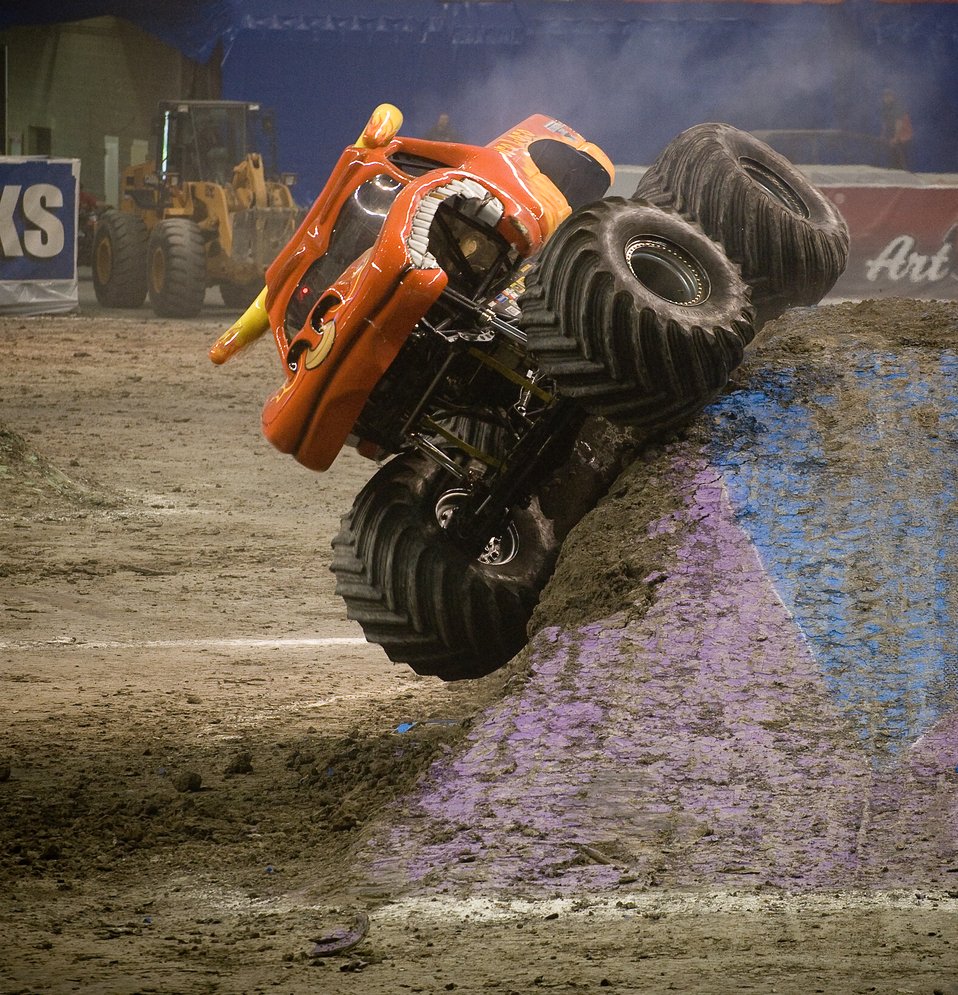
AF flies high at Monster Jam

Lupe Soza, driving El Toro Loco, gave the best freestyle performance with a perfect score to win the event at the 2009 Monster Jam at the Alamodome in San Antonio on Jan 11. Mr. Soza drove his truck to the limit with multiple two-wheeled saves as he jumped off, bounced on and drove over the obstacles made of dirt mounds, busses and crushed cars. Approximately 45,000 people attend the event. These monster trucks have big block supercharged racing V-8 engines that churn out more than 1,400 horsepower. They weigh approximately 10,000 lbs and are equipped with four-wheel steering. The wheels and tires are 66